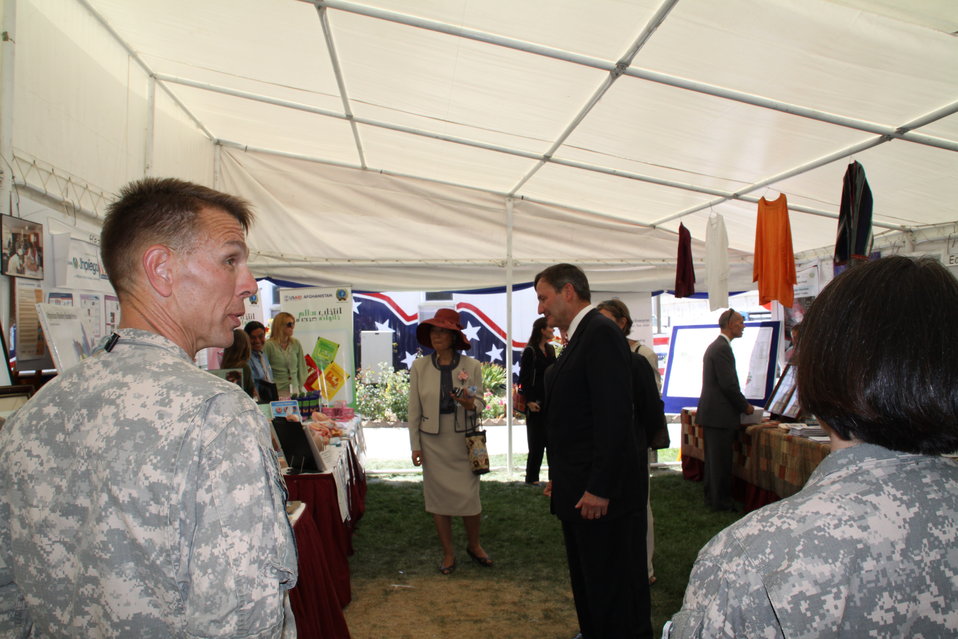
Kabul Official July 4th Celebration